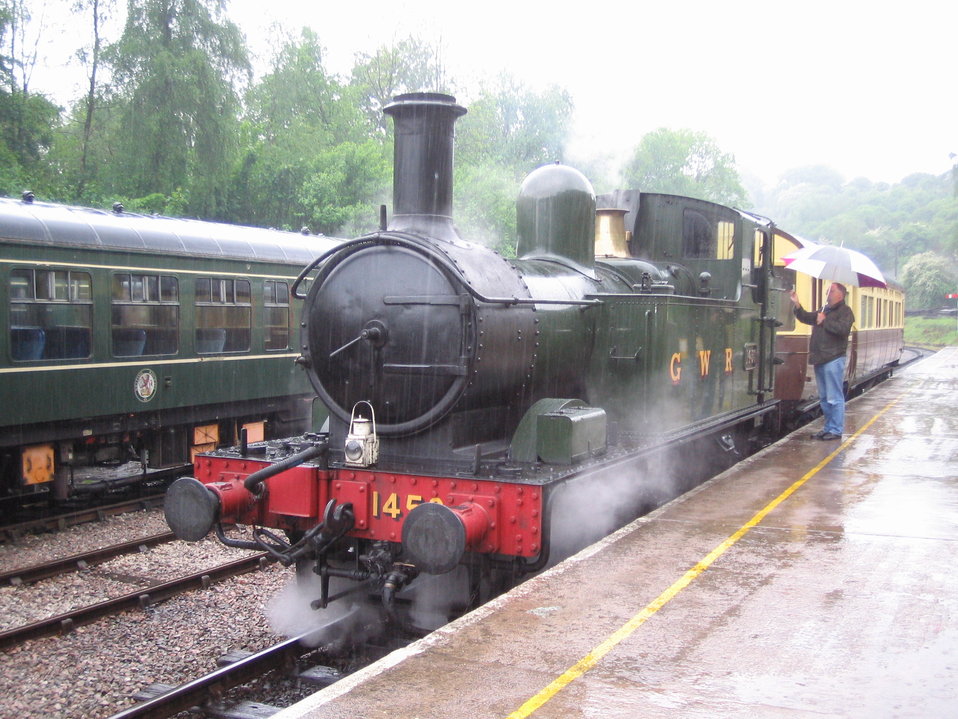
1450 & Autocoach 178 at Norchard Low Level.